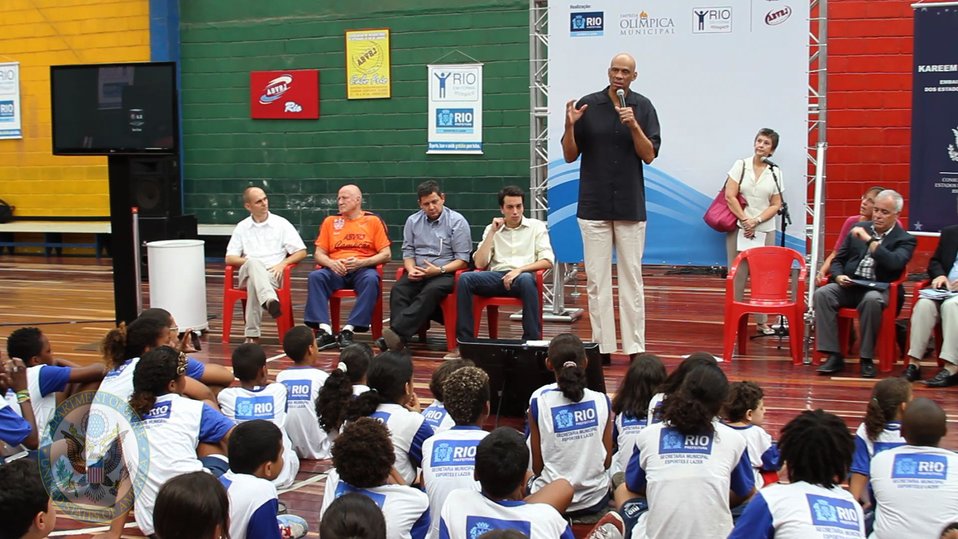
Global Cultural Ambassador Kareem Abdul-Jabbar Engages Youth

Hall-of-Famer and Global Cultural Ambassador for the U.S. Department of State Kareem Abdul-Jabbar discusses the importance of education, social and racial tolerance, cultural understanding, and using sports as a means of empowerment with youth in Rio de Janeiro, Brazil, on January 26, 2012.